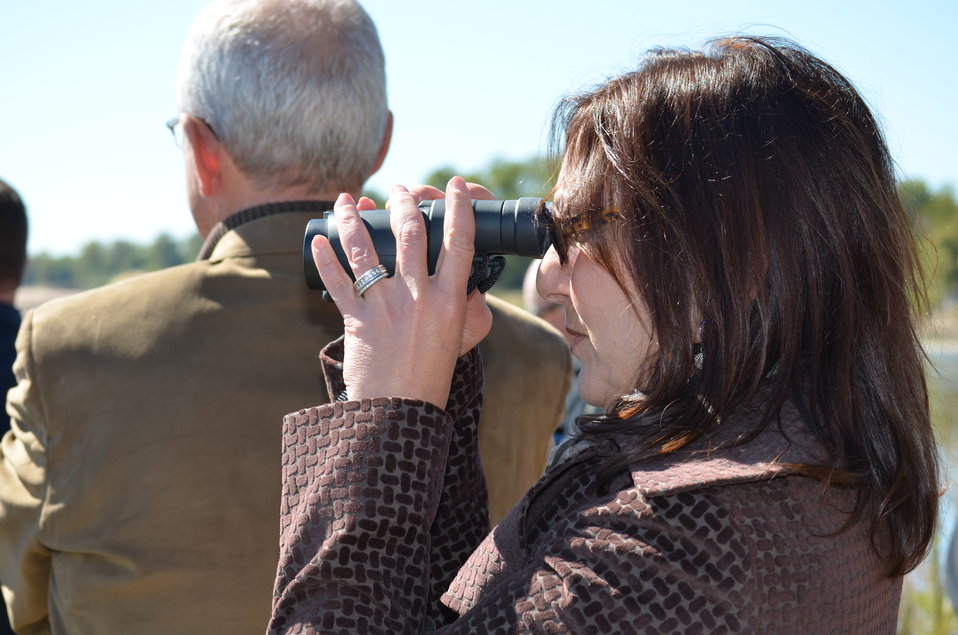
Acting Asst. Secretary gets a closer look

Acting Asst. Secretary Jacobson viewing confluence of rivers from shore at Edward 'Ted' and Pat Jones Confluence Point State Park. USFWS/Ashley Spratt